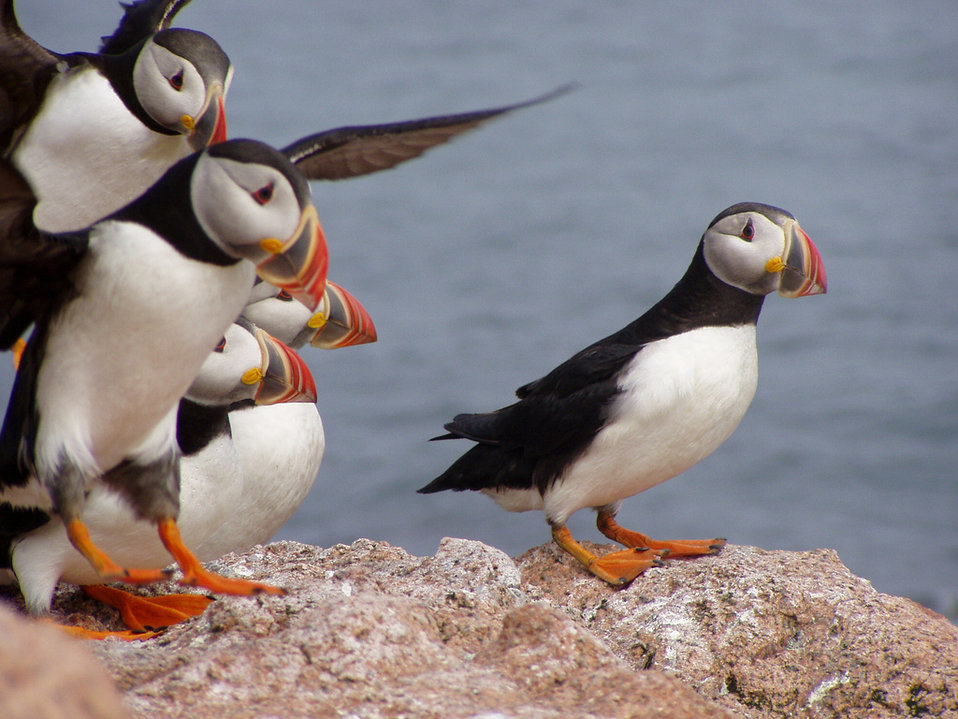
Puffins

Maine Coastal Islands National Wildlife Refuge/USFW